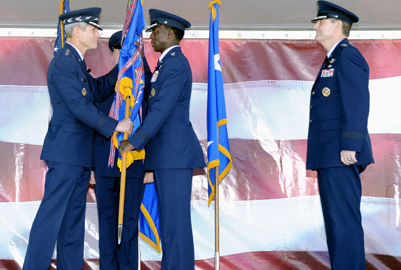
New AETC commander

Air Force Chief of Staff Gen. Norton Schwartz (left) presents Gen. Edward A. Rice Jr. (center) with the Air Education and Training Command colors during a change of command ceremony Nov. 17, 2010, at Randolph Air Force Base, Texas. General Rice succeeded Gen. Stephen R. Lorenz (right) as AETC commander.